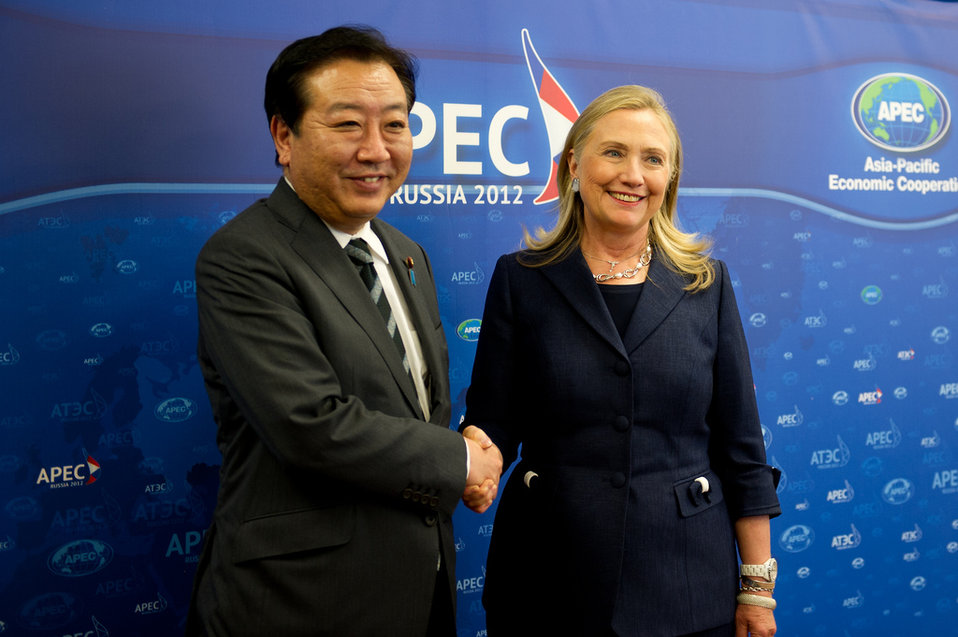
Secretary Clinton Meets With Japanese Prime Minister Noda

U.S. Secretary of State Hillary Rodham Clinton shakes hands with Japanese Prime Minister Yoshihiko Noda before their meeting during the Asia-Pacific Economic Cooperation (APEC) Leaders' Week in Vladivostok, Russia, September 8, 2012.